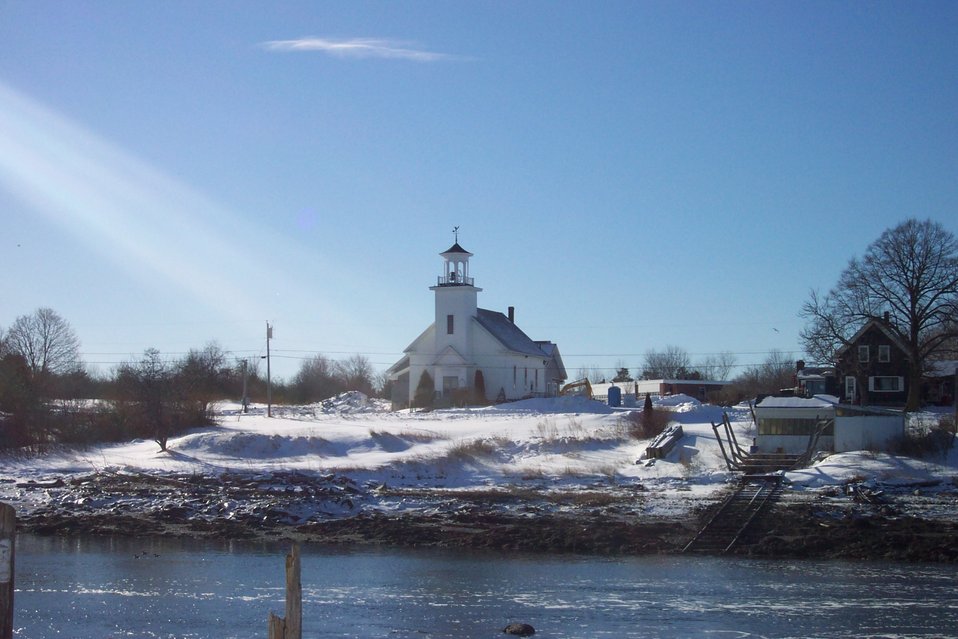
A church at South Thomaston.